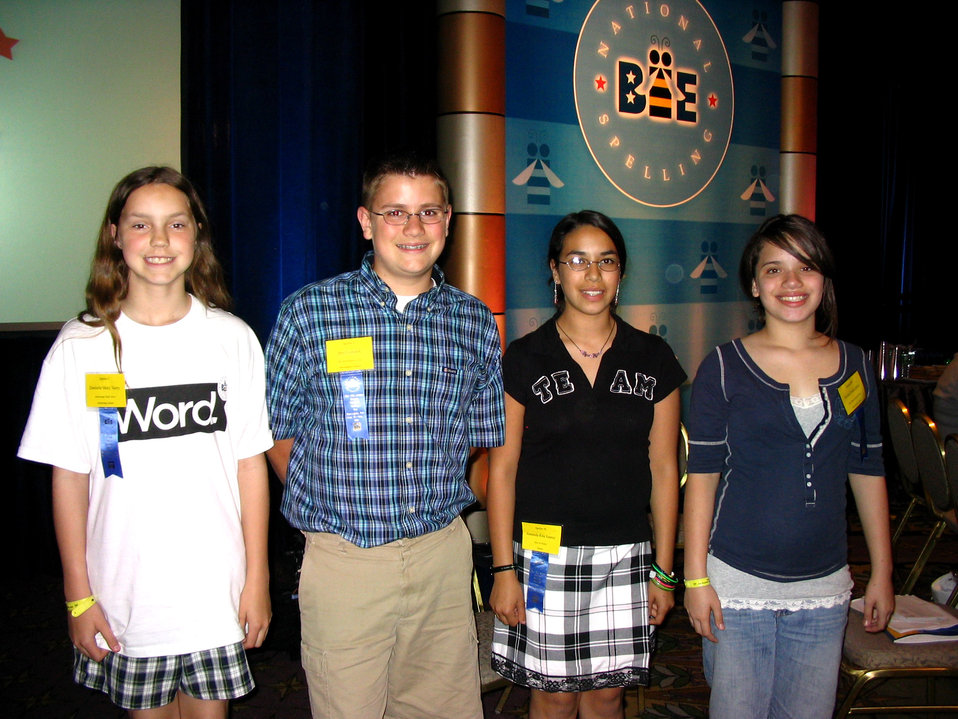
Air Force teens participate in national spelling bee

Four Air Force family members participated in the Scripps-Howard National Spelling Bee in Washington, D.C., from May 31 to June 1. From left are: Danielle Tacey, 12, of Elmendorf Air Force Base, Alaska; Ben Szatanek, 12, of Keesler AFB, Miss.; Amanda Suarez, 14, of Ramstein Air Base, Germany; and Taysha Silva, 12, of San Antonio.